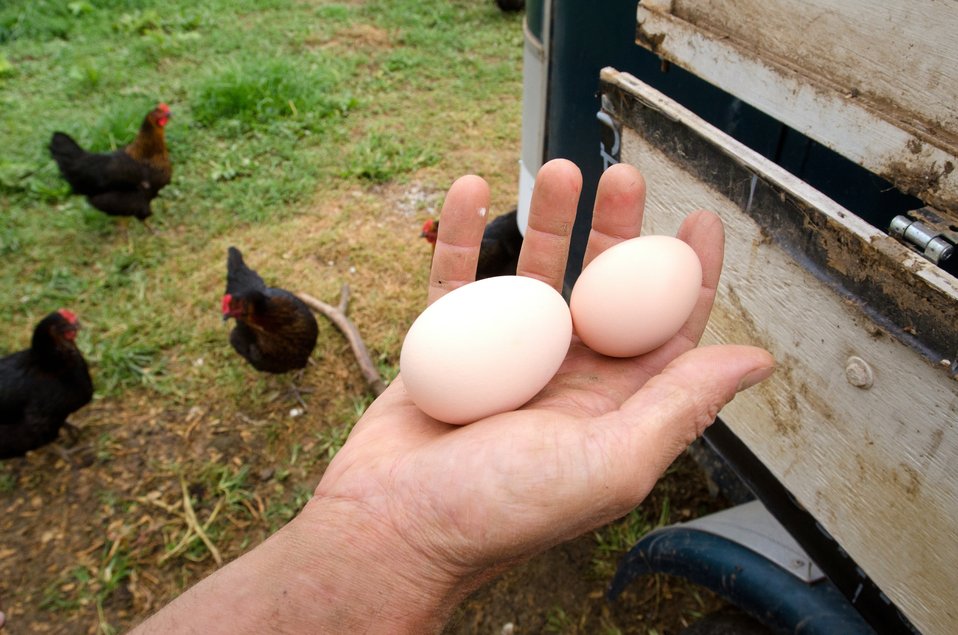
Farm assistant George Kloph shows an large organic egg, right, and a large double yoke egg, left, that he discovered during his checks on the health and safety of laying hens at Nick’s Organic Farm, in Adamstown, MD, on Friday, July 12, 2013. Mr. Kloph said, that younger chickens sometimes lay double yoke eggs and as they get older, the size becomes more consistant. Discarded horse trailers have been repurposed as coops with nests on the side that allow for easy egg harvesting. The farm, owned by Nick Maravell, produces Black Angus beef, chicken, turkey, eggs, hay, soybeans, corn, alfalfa, orchard grass, rye; and other crops. The cattle are100% grass-fed receiving certified organic pasture, certified organic hay (in winter), water and mineral salts mixed with sea kelp. The cattle are not fed hormones, antibiotics or animal products. Poultry feed from grain is ground from organic grain. The poultry also graze on organic pastures. The farm has conducted on-farm research with federal, state and non-profit agencies to refine organic practices. An organization such as the U.S. Department of Agriculture (USDA) Agricultural Research Service (ARS) center in Beltsville has been able to conduct research to improve organic crops and to breed and manage the cattle so that they have.